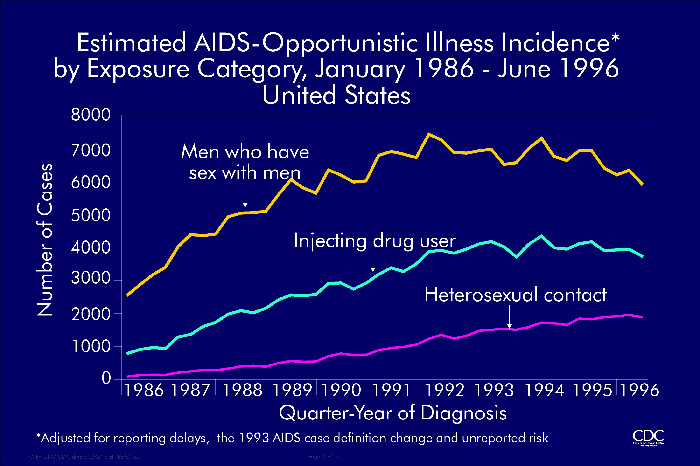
Estimated AIDS-Opportunistic Illness Incidence by Exposure Category